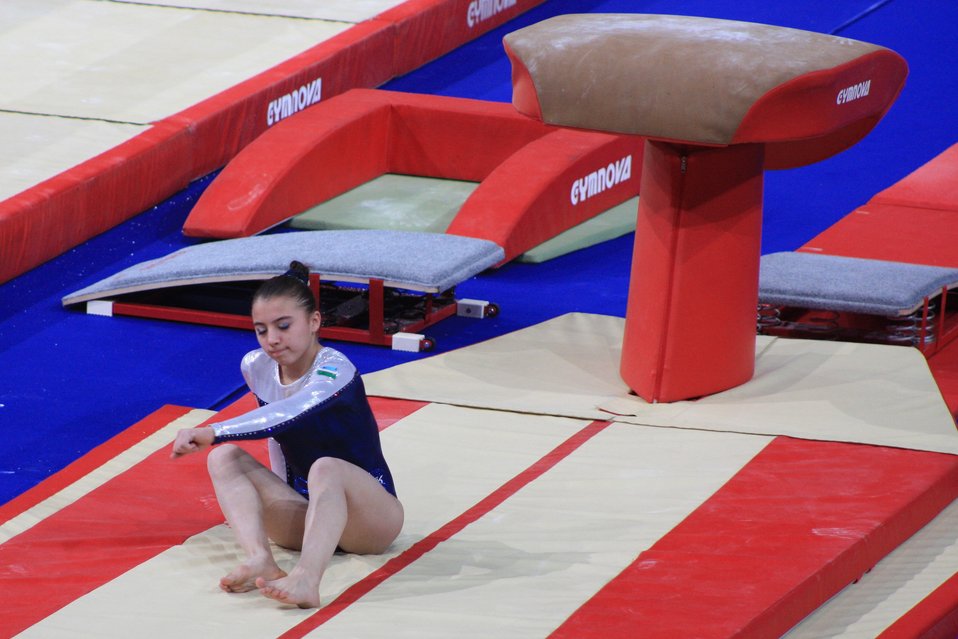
Fran√ßais†: Mauvaise r√©ception d'Irina Volodchenko en qualifications du saut aux Internationaux de France (2010).